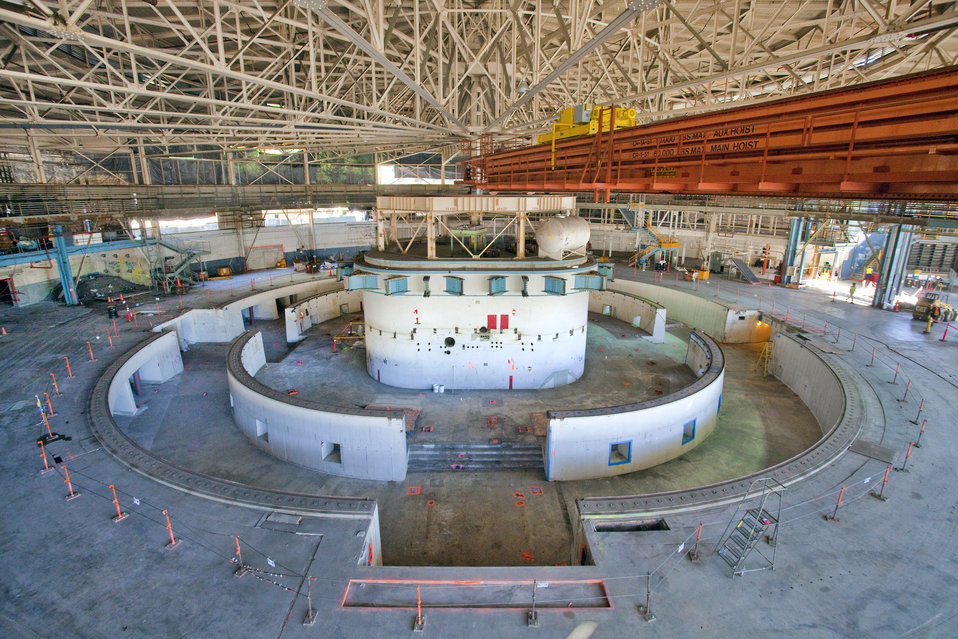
Bevatron in its final stripped down phase before building removal at Lawrence Berkeley National Laboratory.